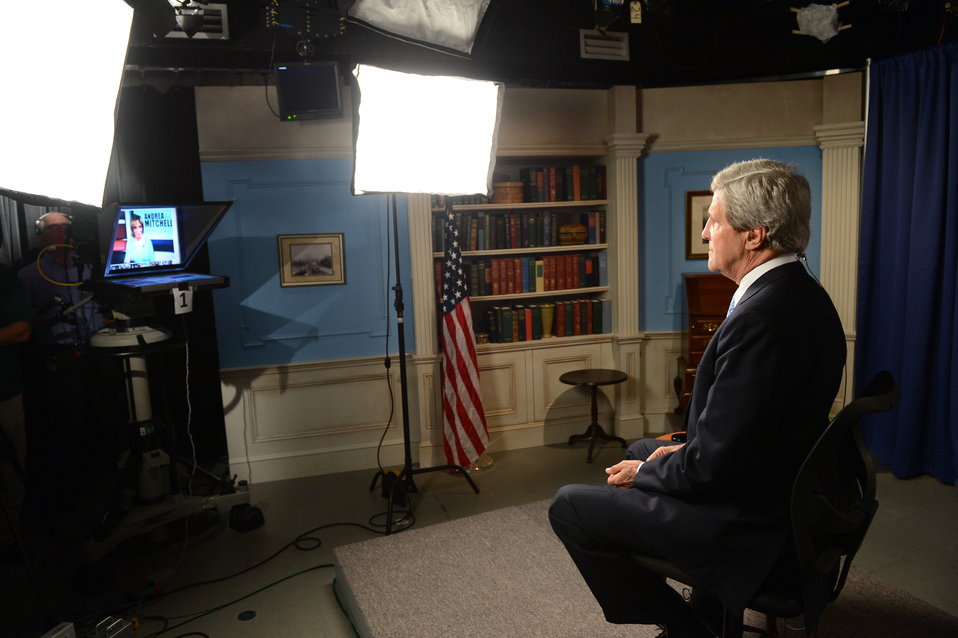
Secretary Kerry Prepares for his Google Hangout

U.S. Secretary of State John Kerry prepares for his Google Hangout with NBC's Andrea Mitchell at the U.S. Department of State in Washington, D.C., on May 10, 2013.